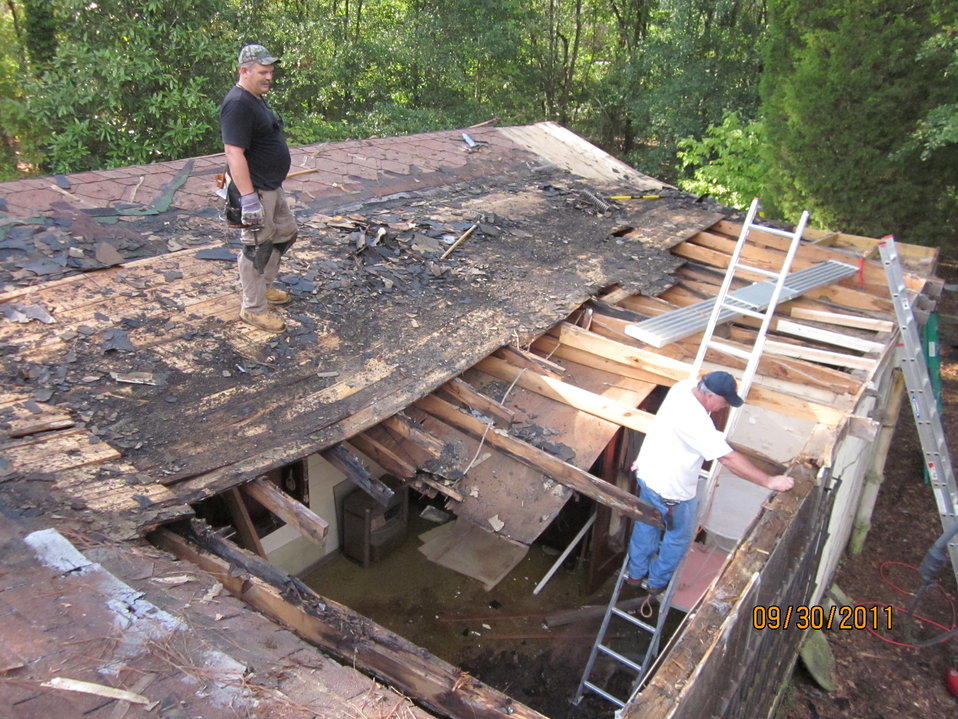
SRR Employees Give Back with United Way Project Vision Work

Several Savannah River Remediation (SRR) employees went to work recently, but not at their customary Savannah River Site (SRS) jobs.

The employees had adopted three projects from the United Way of Aiken County’s Project Vision list and were donating multiple days of their time off to give back to the community.

One group repaired the roof of a rear porch and nearly replaced an entire front porch at a home in Warrenville.

Sharon Rodgers, President of the United Way of Aiken County, explains the Project Vision list continues to grow with homes owned by the elderly, disabled or low-come families, which are in need of repairs.